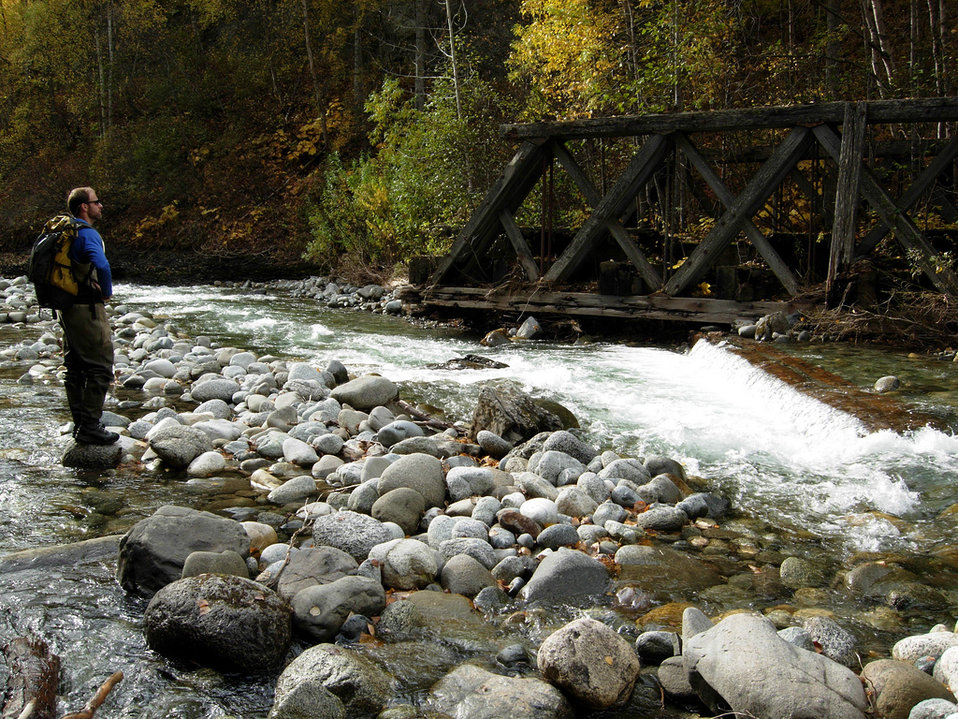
Moose Creek Bridge, Alaska

Chickaloon Village fish biologist Brian Winnestaffer surveys a reach of Moose Creek where a railroad once bridged the stream. Mary Price/USFWS. Read Winnestaffer's story, Exiled Salmon Return Home in spring 2009 Eddies www.fws.gov/eddies.